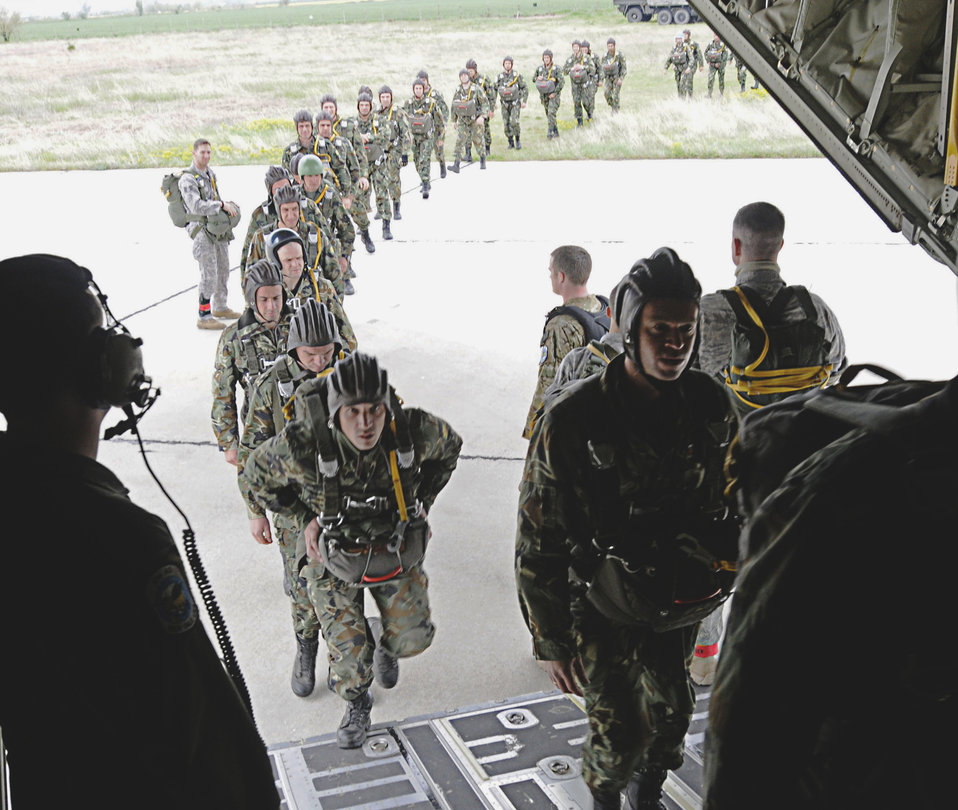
Thracian Spring 2011

Members from the 435th Security Forces Squadron usher in more than 50 Bulgarian air force paratroopers into a C-130J Super Hercules April 29, 2011, in support of Thracian Spring 2011, in Plovdiv, Bulgaria.